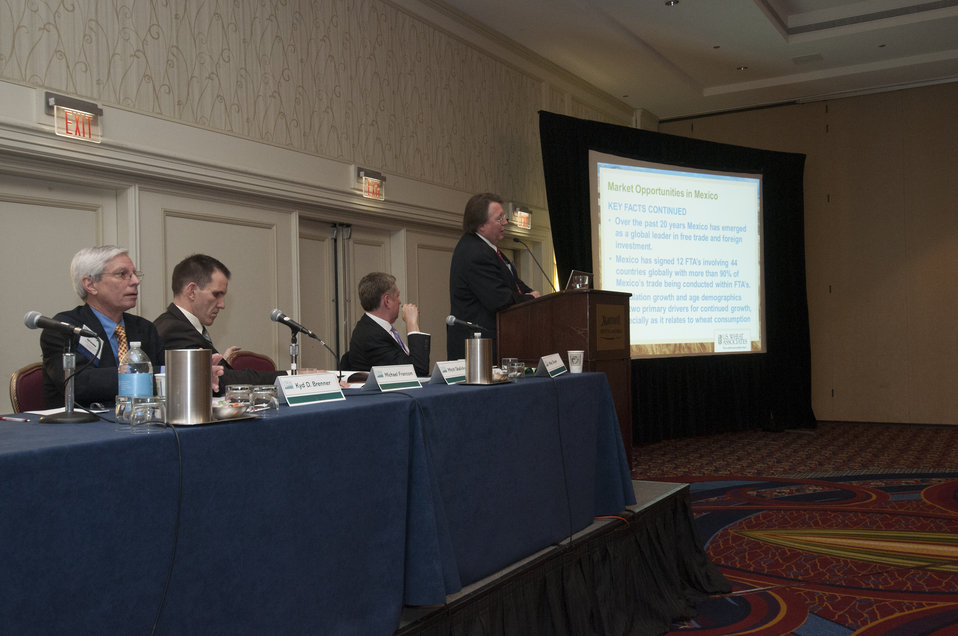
The U.S. Department of Agriculture (USDA) 2013 Agricultural Outlook Forum was held at the Crystal Gateway Marriott Hotel in Arlington, VA on Thursday, Feb. 21, 2013. The breakout session on Prospects for Export Growth in Mexico, Indonesia, South Korea, and Turkey (MIST) Countries focused on the importance of these markets for U.S. agricultural products and addressed the food consumption trends for these markets.